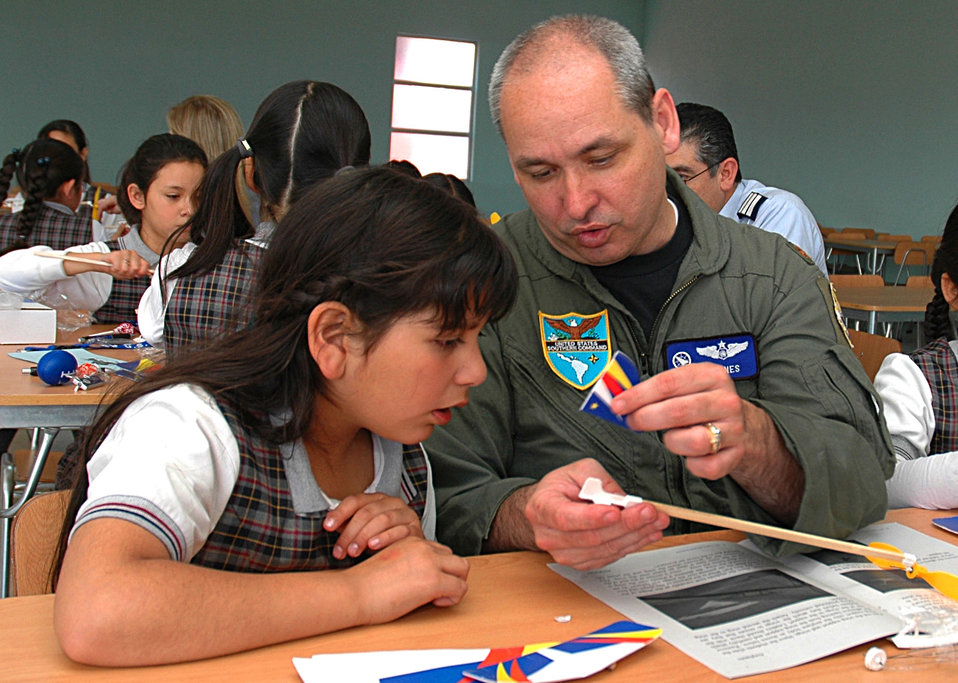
Airmen, Chilean school 'partner' to teach children aviation

Maj. Mark Jones, operations officer for the U.S. Military Group in Chile, assists a a student at the Complejo Educacional Esperanza School in Santiago, Chile, during a community outreach event on Oct. 27. The outreach program is part of Operation Southern Partner, an Air Forces Southern-led exchange aimed at providing intensive, periodic subject matter exchanges with partner nations in the U.S. Southern Command area of focus.